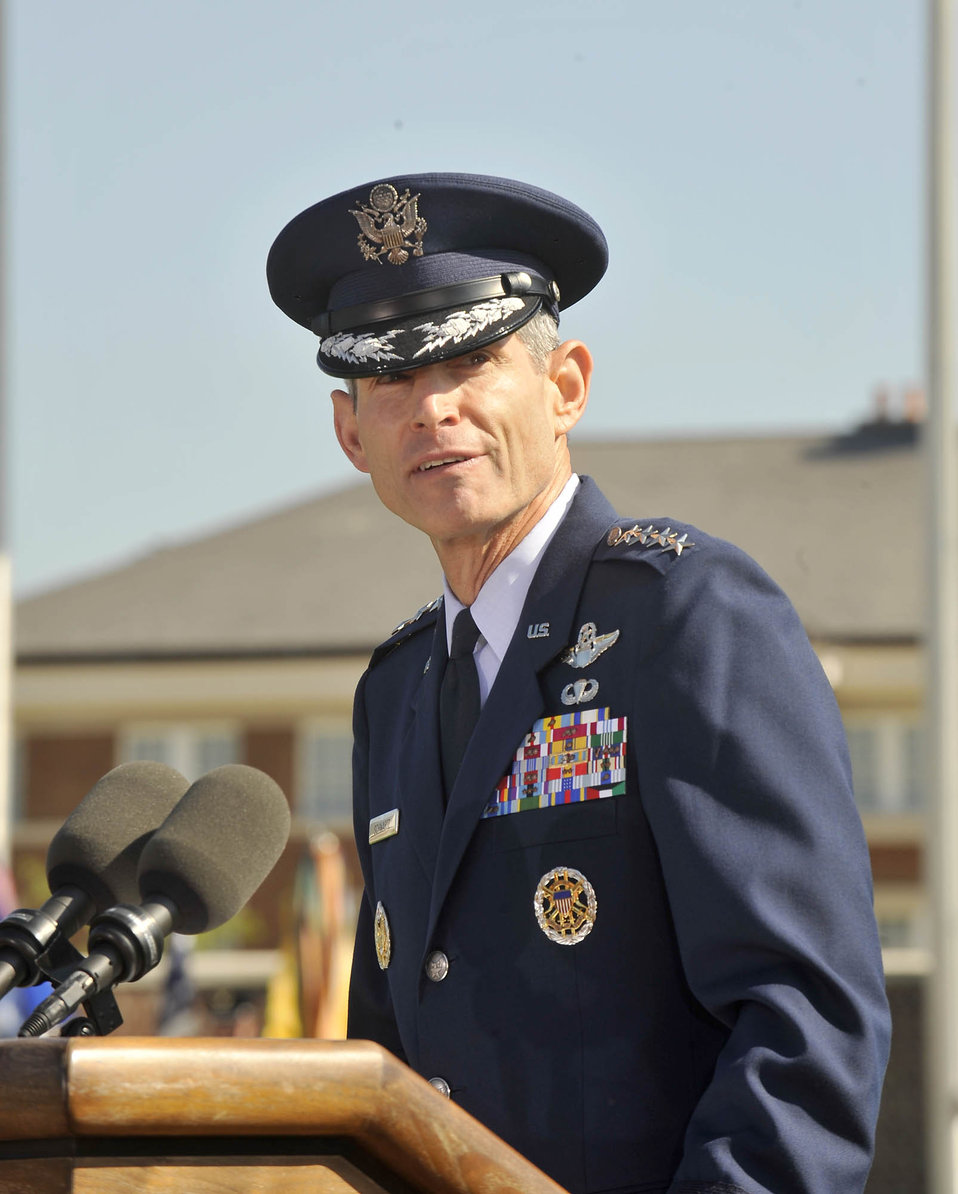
General Schwartz welcome ceremony

Gen. Norton A. Schwartz addresses his family and others who attended his welcoming ceremony Aug. 12 at Bolling Air Force Base D.C. General Schwartz is the 19th Air Force chief of staff.